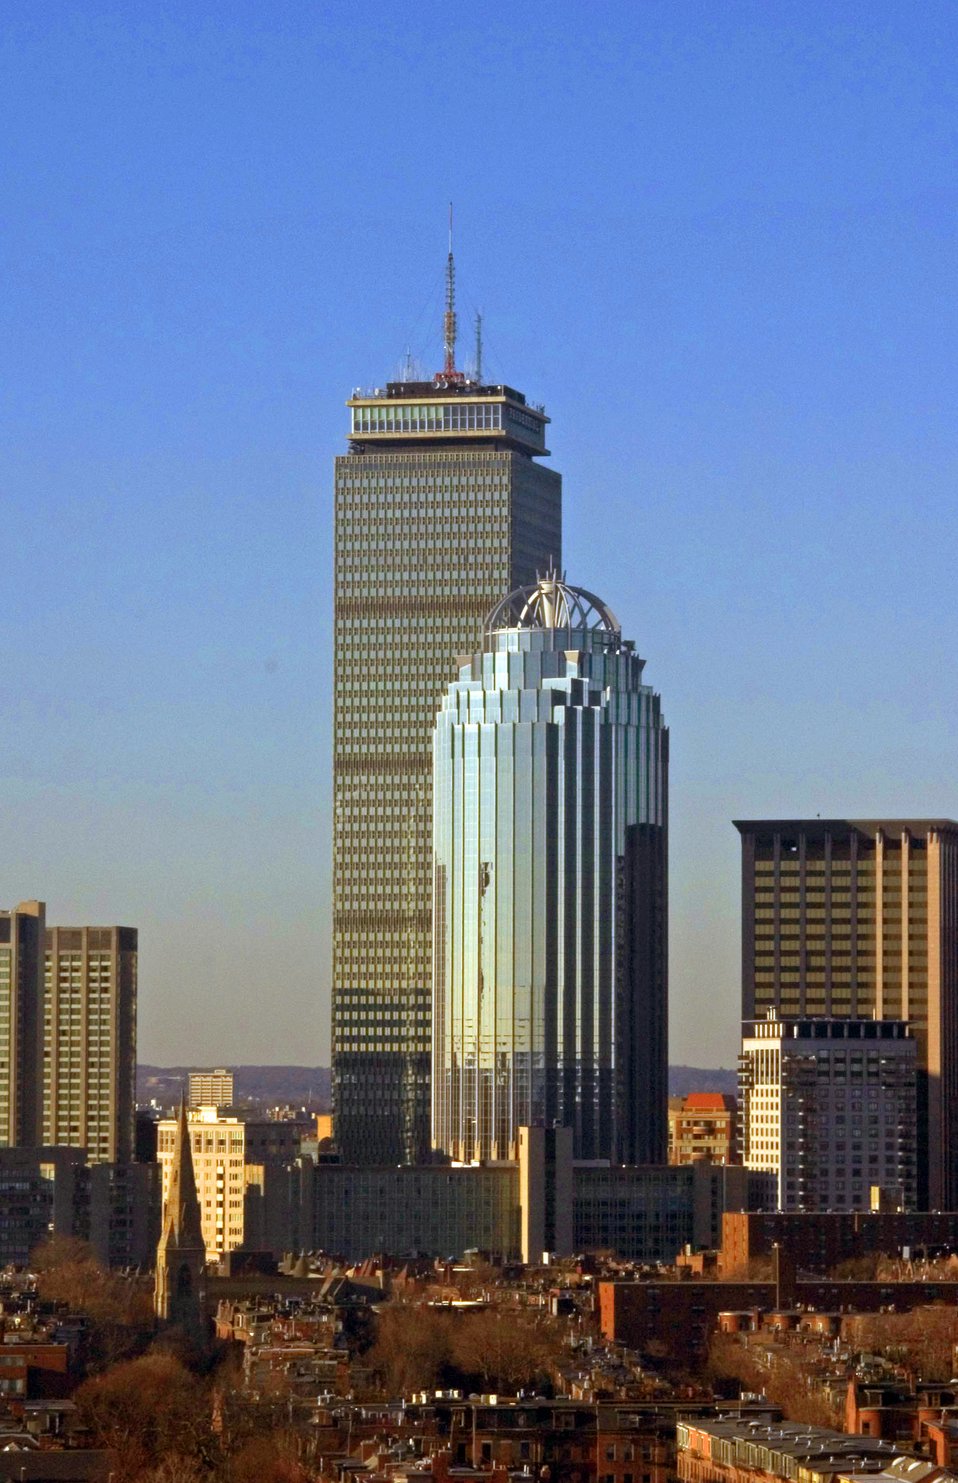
A retouched version of Dragoonkain's public-domain Image:CRW 1473.jpg -- I straightened the buildings (and subsequently cropped slightly), adjusted brightness and levels, sharpened, and tweaked colors. (It's amazing what can be done in Photoshop!)